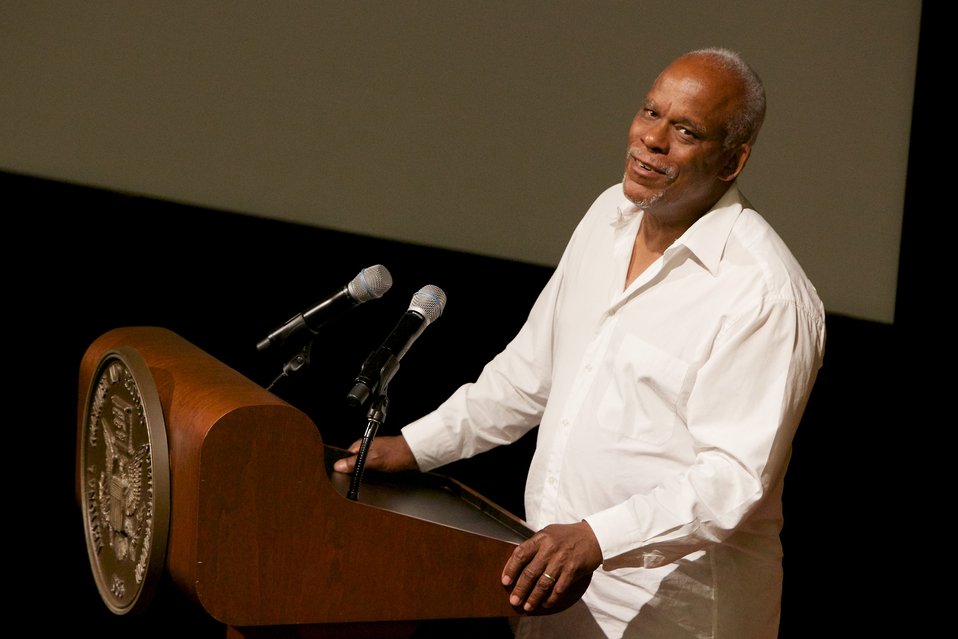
Freedom Summer